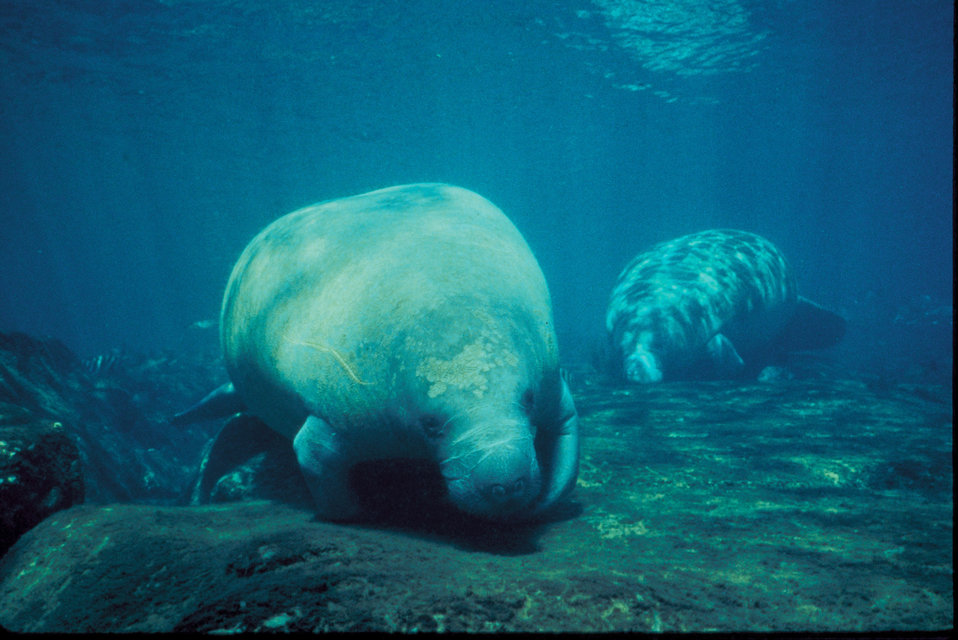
Florida Manatee.